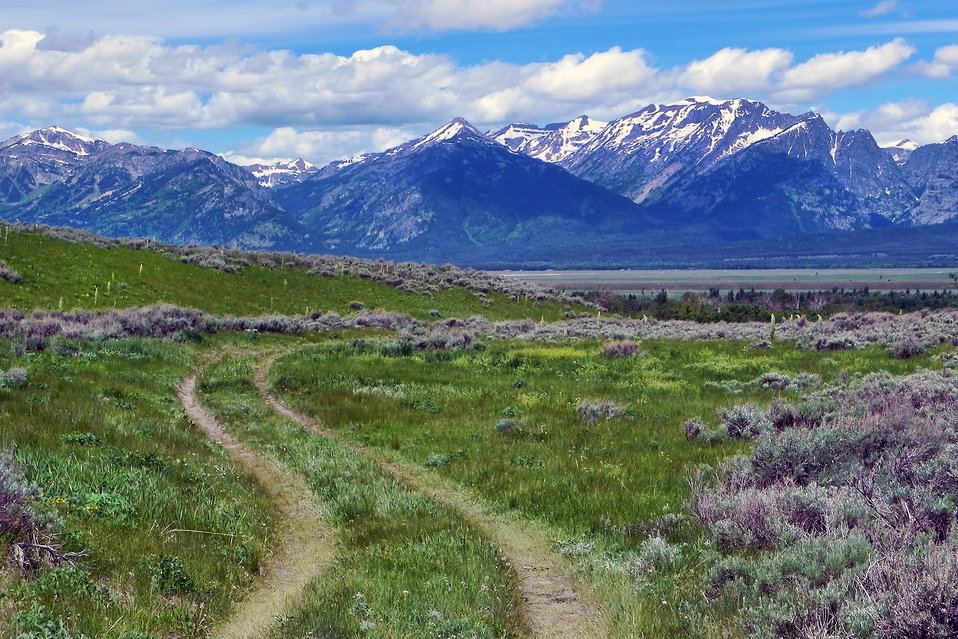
The Road Less Traveled

A two-track road on the northern end of the National Elk Refuge leads to an incredible view of the Teton Range.

Credit: USFWS / BJ Baker, National Elk Refuge volunteer